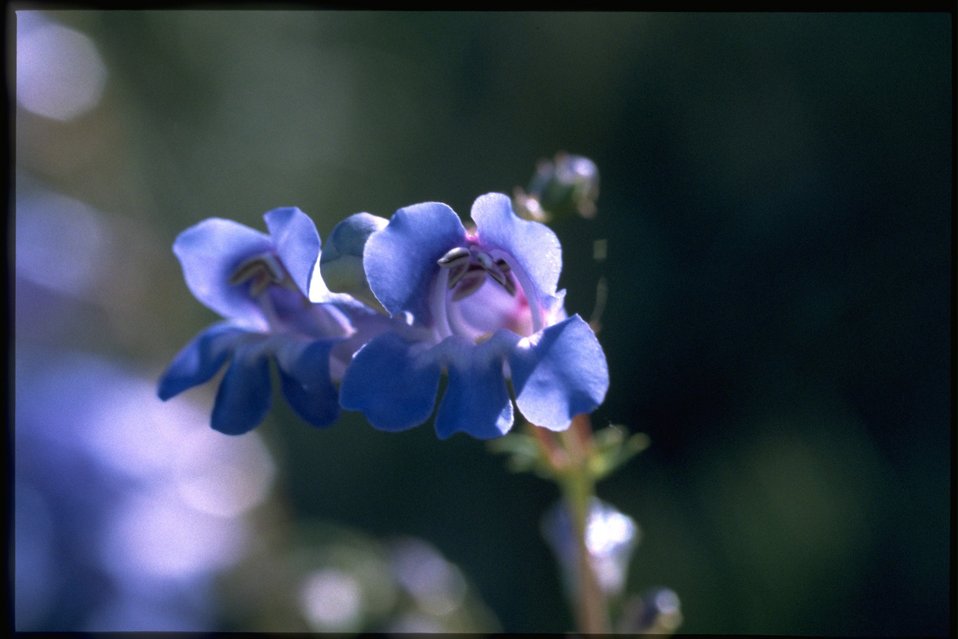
Closeup shot of Penstemon.